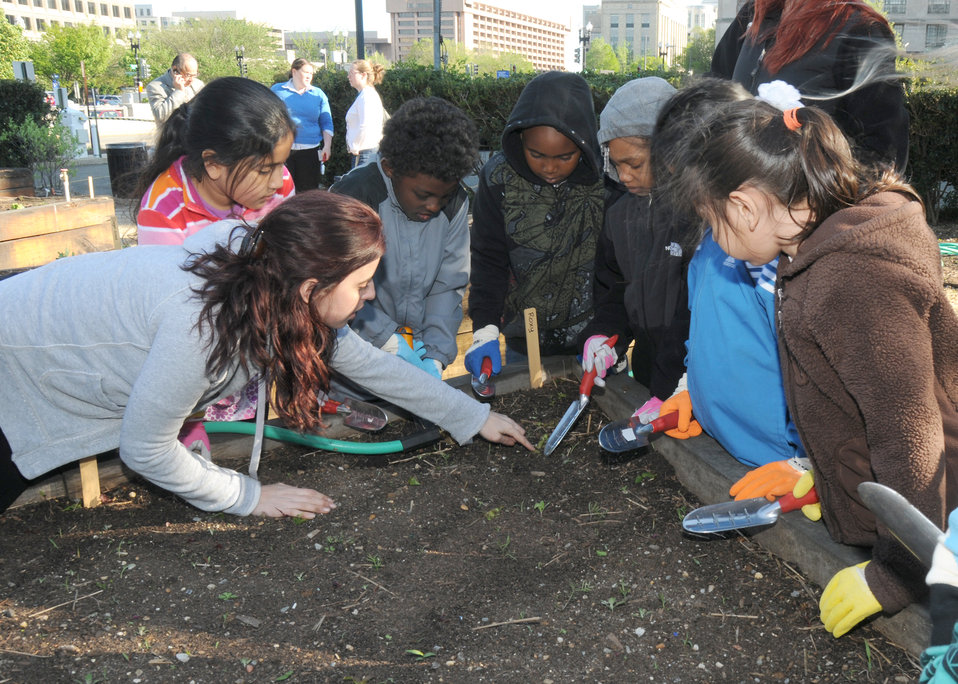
Young people from the non-profit Jubilee Housing organization’s after school youth services program help U.S. Department of Agriculture (USDA) employee’s plant vegetables and herbs in the People’s Garden on Friday, Apr. 9, 2010. The Jubilee Youth Services offers a safe place for learning and fellowship for young people through a supervised after-school program. Showing the students how to plant is Annie Ceccarini, Education Outreach Specialist for the People’s Garden. USDA photo 10di1300-127